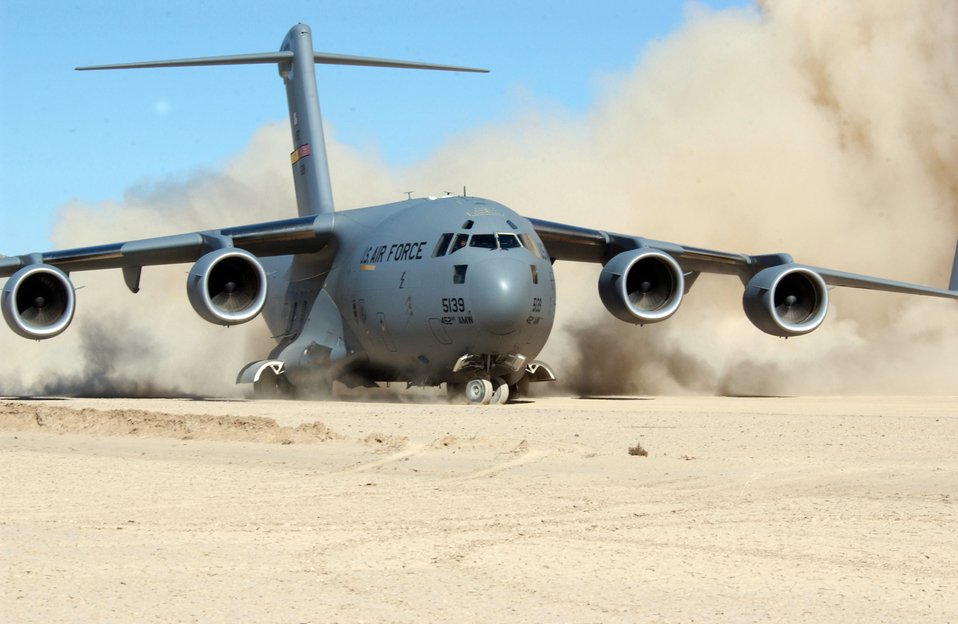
Turning around

FORT IRWIN, Calif. (AFPN) -- A C-17 Globemaster III turns around at the end of a dirt runway after landing Feb. 10. The aircraft is from March Air Reserve Base, Calif.